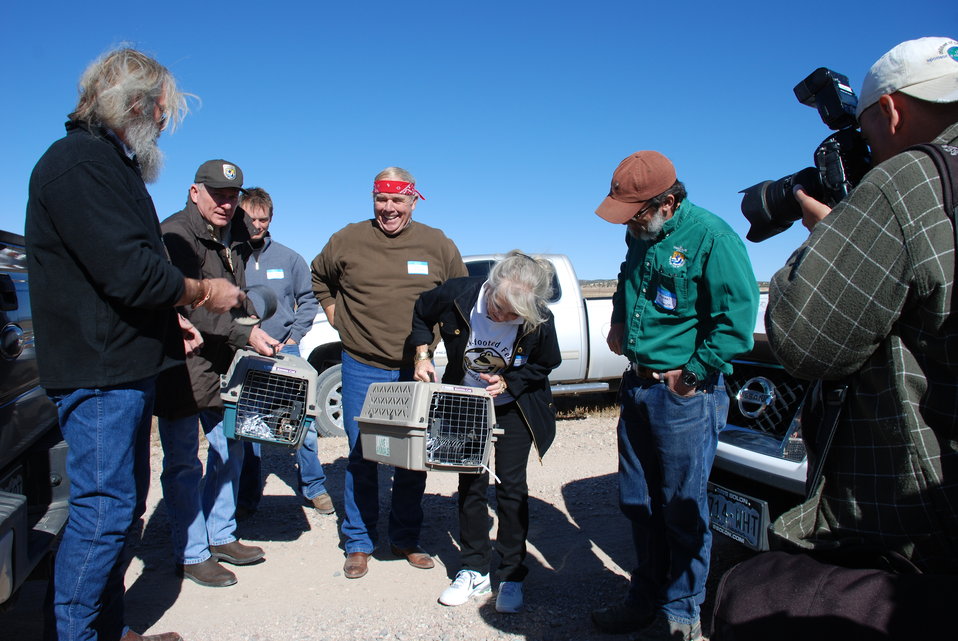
Black-footed Ferret Release

On Wednesday, October 30, 2013, thirty endangered black-footed ferrets were released onto cattle rancher Gary Walker's land, west of Pueblo, Colorado.

The release launched a potentially new way of preserving endangered species and was accomplished by way of a Safe Harbor Agreement (SHA). This SHA provides opportunities for private and Tribal landowners to volunteer their lands for reintroductions of this endangered species without affecting their land-use activities beyond mutually agreed-upon measures. It also extends these assurances to surrounding non-participating lands and other landowner interests. This SHA will be an important step in promoting the recovery of this iconic species.